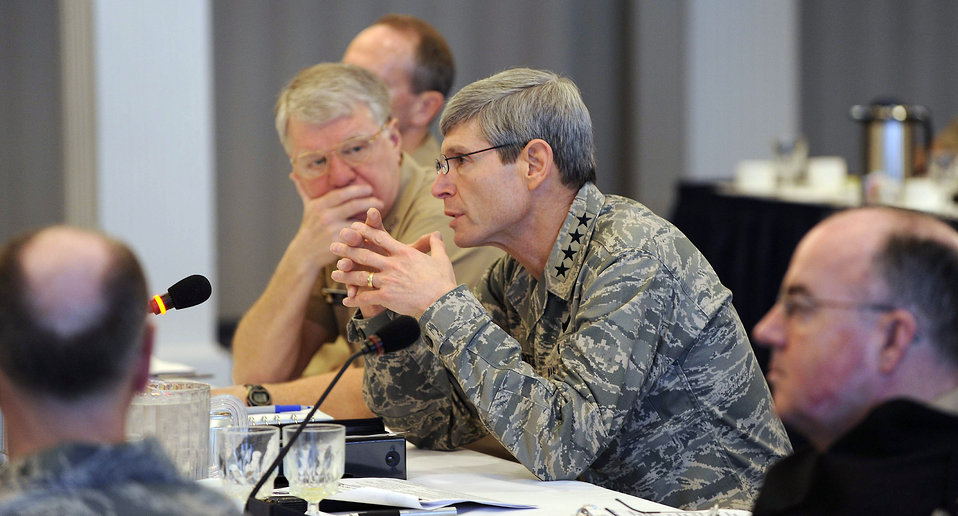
Warfighter talks

Air Force Chief of Staff Gen. Norton Schwartz weighs-in on one of the Navy-Air Force Warfighter Talk discussions while Chief of Naval Operations Adm. Gary Roughead listens March 18 at Bolling Air Force Base, D.C. The two services came together to discuss issues affecting current and future operations.